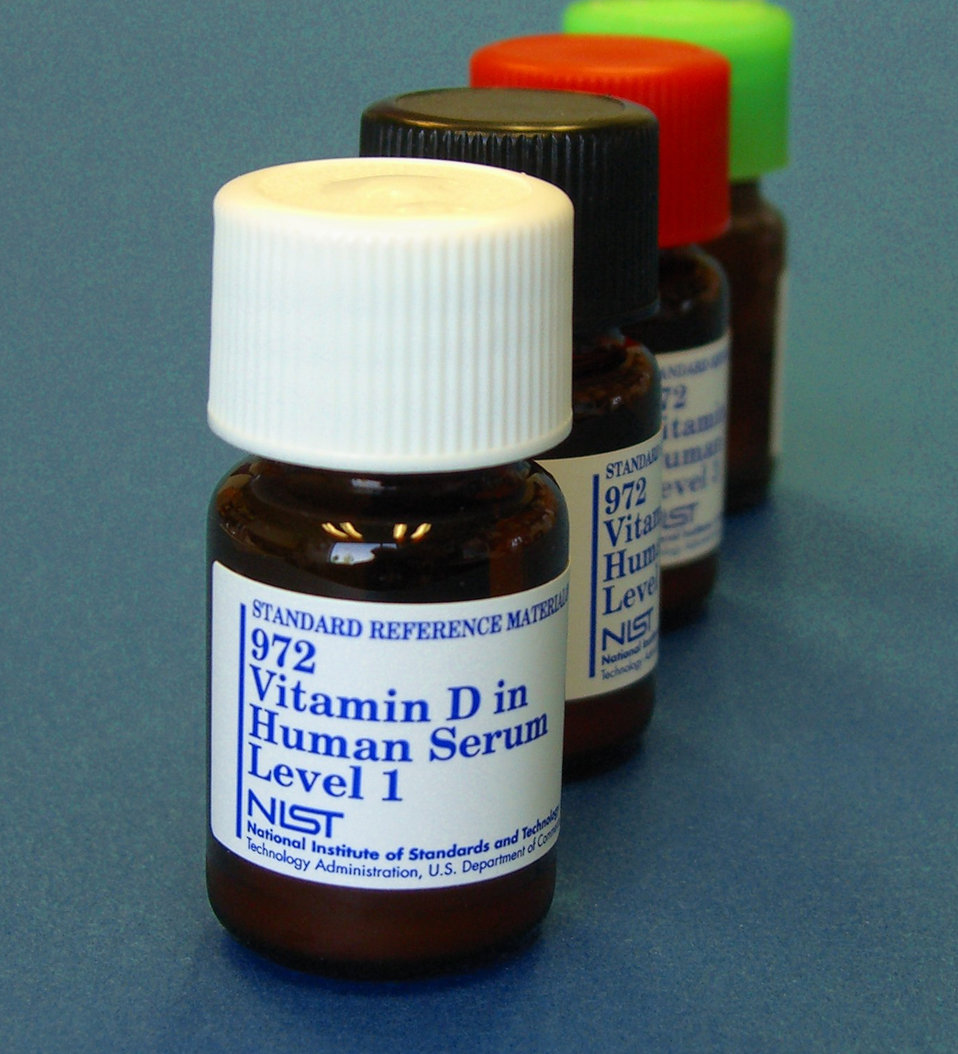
Vitamin D SRM

Scientists at NIST and NIH have developed a new Standard Reference Material, SRM 972, Vitamin D in Human Serum, to help laboratories validate the accuracy of their test methods. More accurate laboratory results should make is easier for physicians to diagnose vitamin D deficiency and aid research related to vitamin D in general.